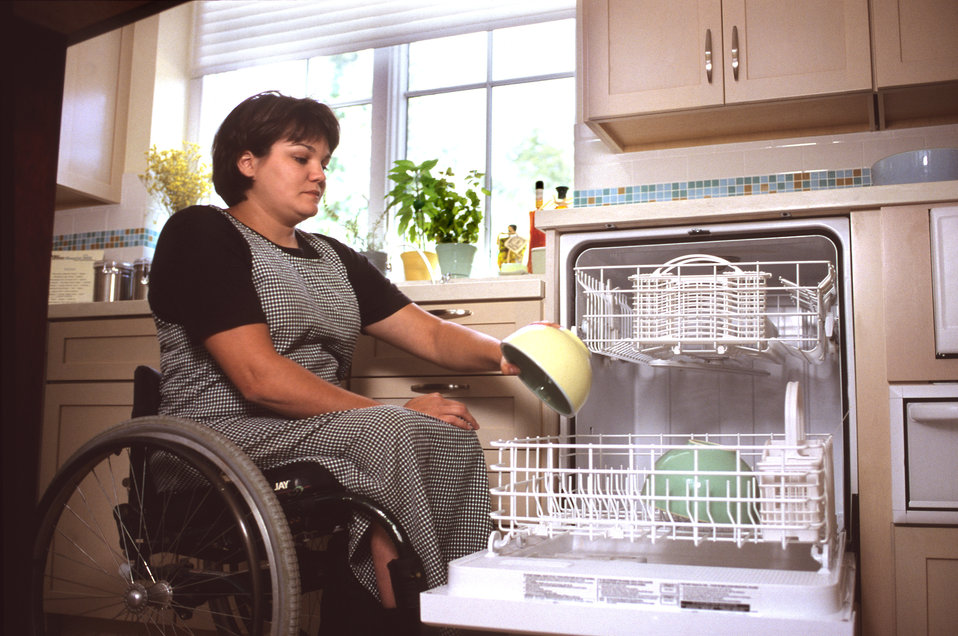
This 2000 image depicted a universally-designed, raised dishwasher that was being loaded by a wheelchair-seated woman, who seemed to be filling the appliance in an effortless manner. Dishwashers installed in this way raise the storage area up within reach of people who use wheelchairs, and who may have difficulty in bending down to the level of conventionally installed appliances. Even from her seated position, this woman could easily reach the dishes in the bottom rack of this raised unit.